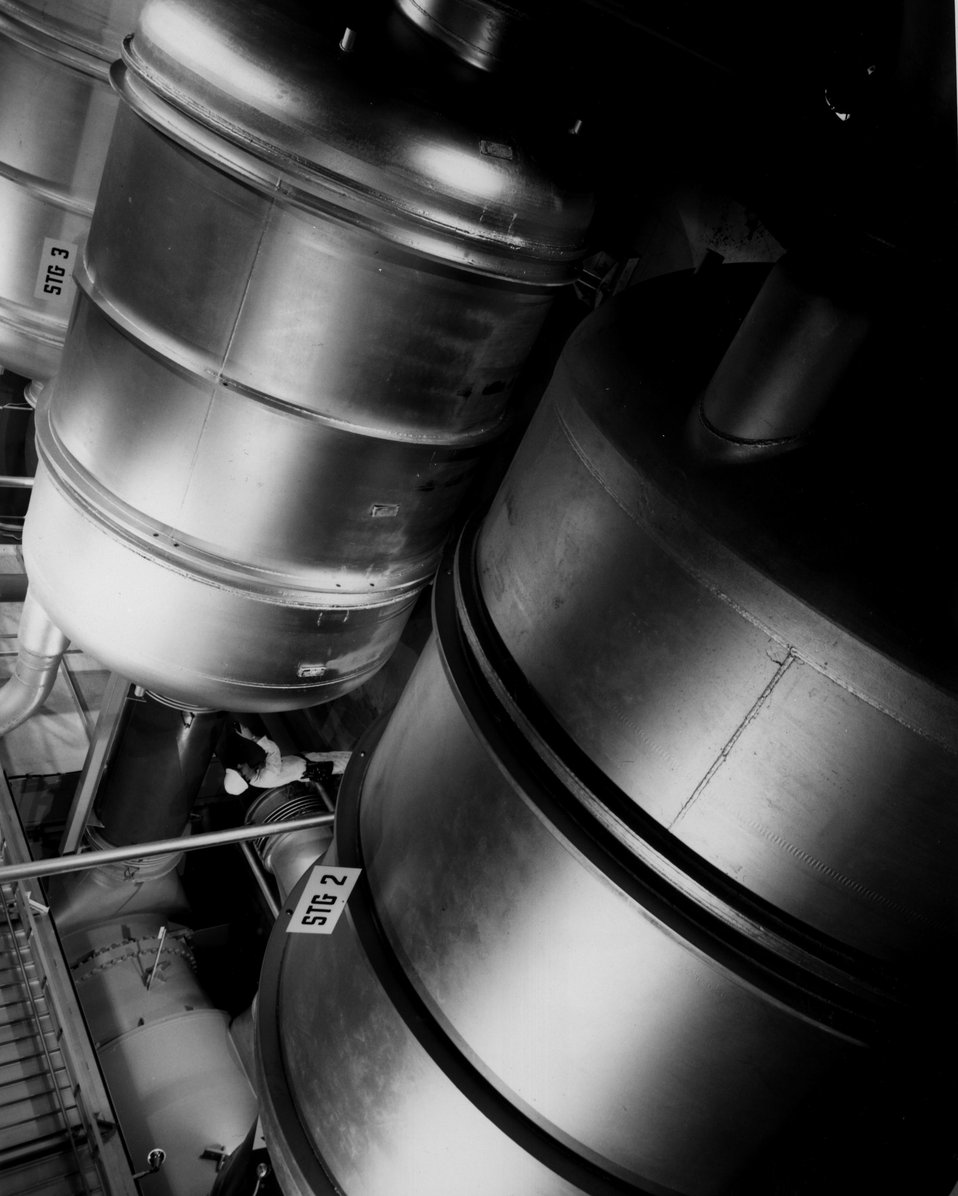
Large size compressors and converters are shown at the Energy Research and Development Administration's Oak Ridge (Tenn.) Gaseous Diffusion Plant. c. 1972